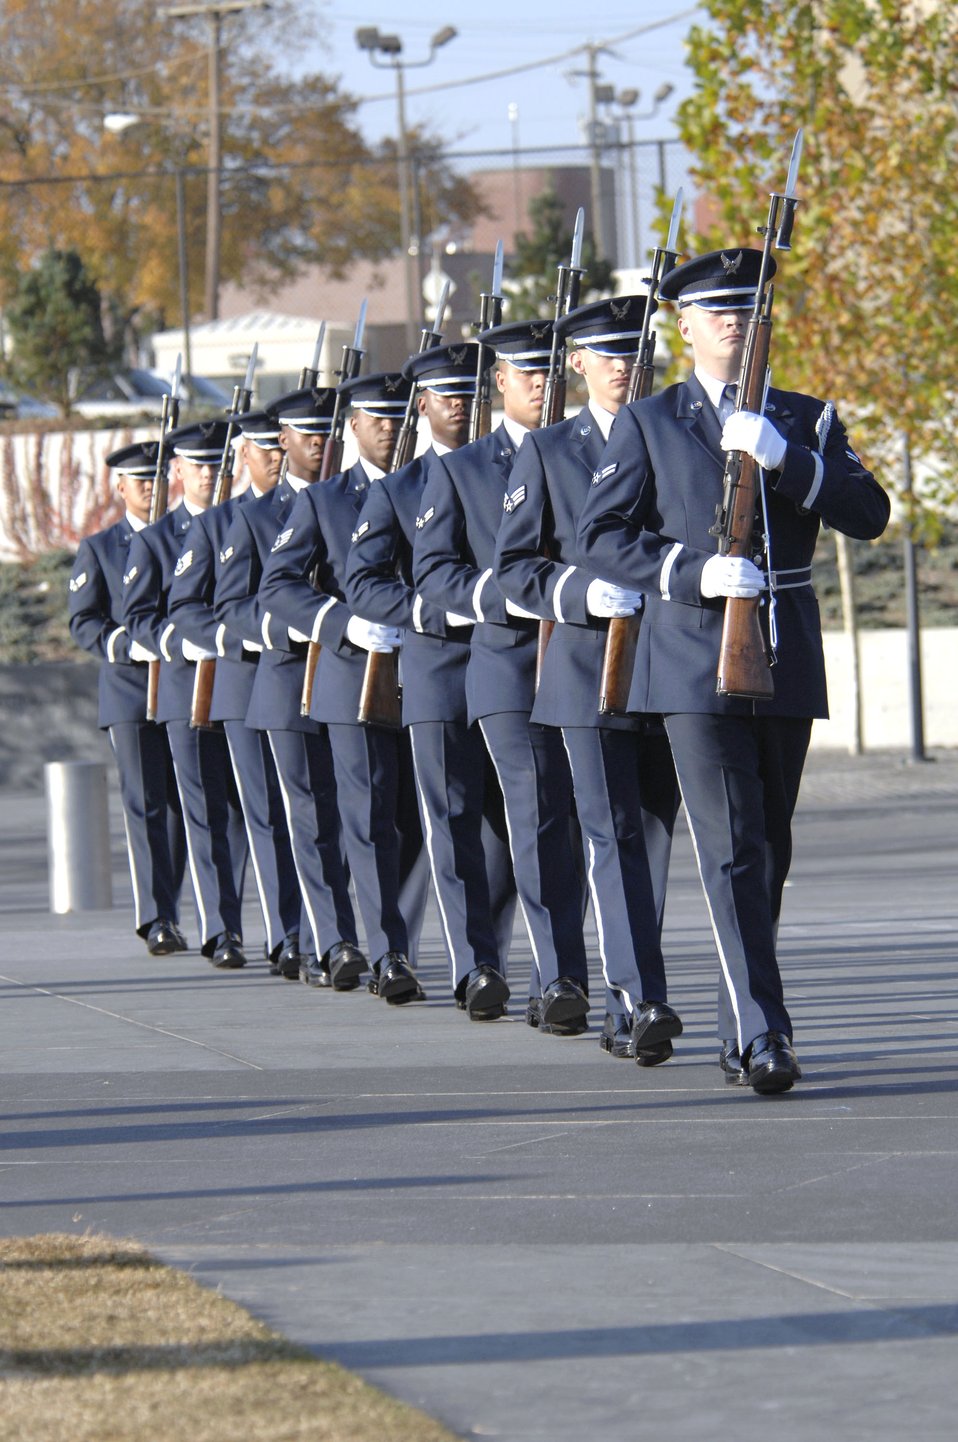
Air Force Honor Guard

United States Air Force Honor Guard members from Bolling Air Force Base, move in formation during a memorial ceremony Nov. 10 in Arlington, Va.